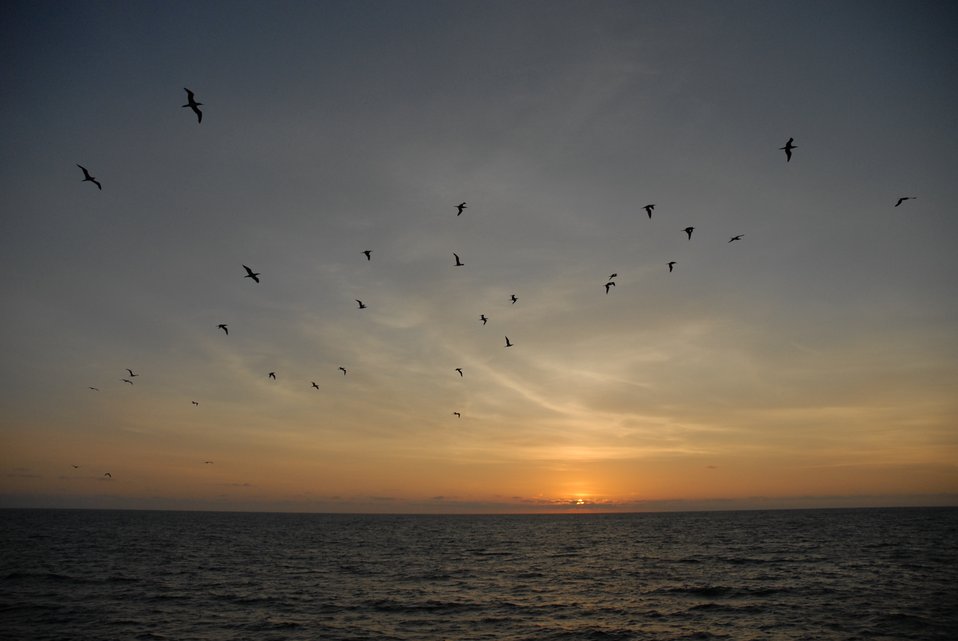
Boobies in flight at sunset.